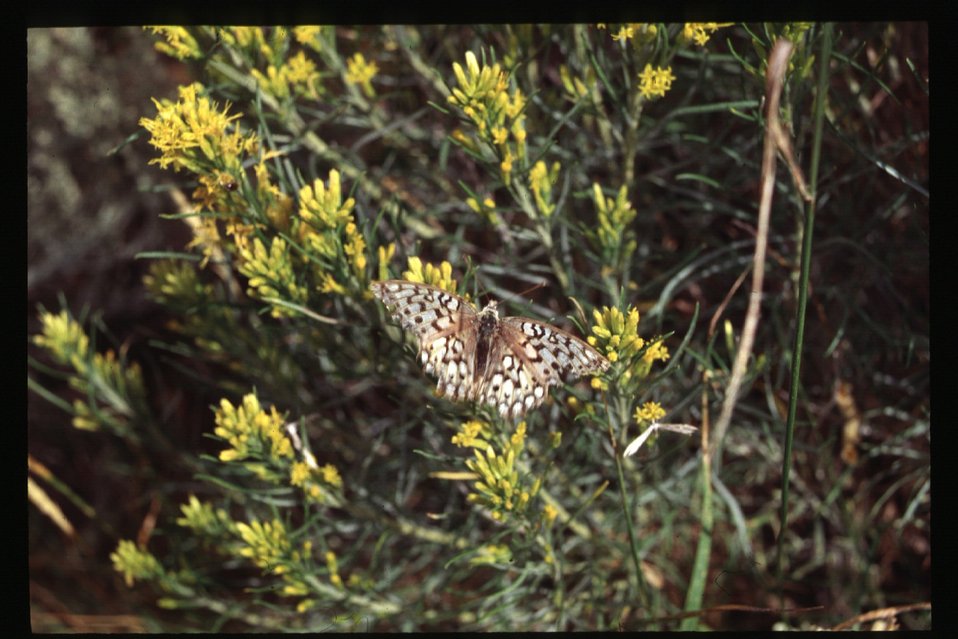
Butterfly Butterflies Rangeland Salmon Field Office UCSC Upper Columbia Salmon Clearwater District